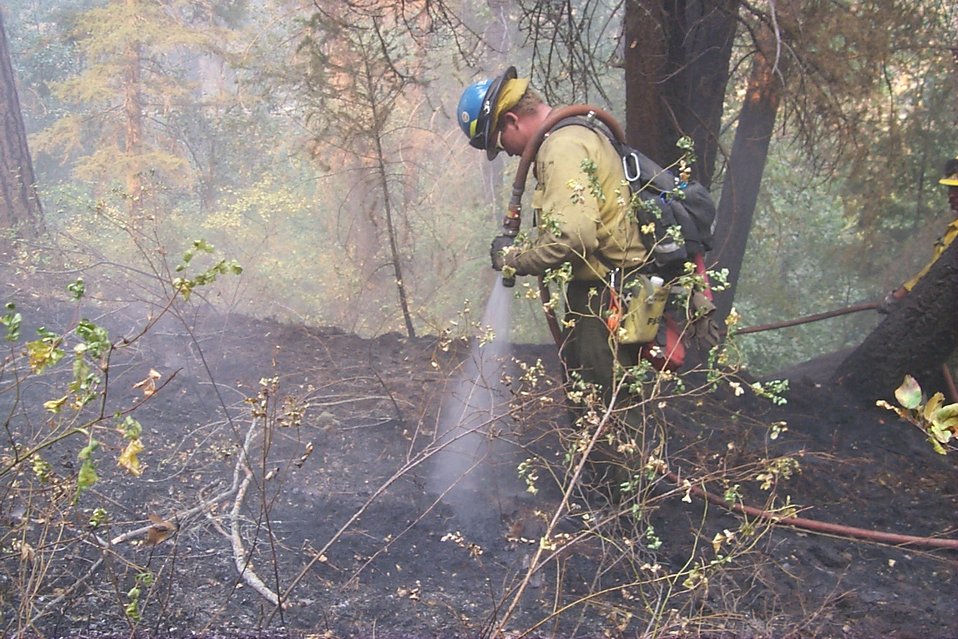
Fire fighter Fire Clearwater Fire Salmon Field Office USRD Upper Snake River District